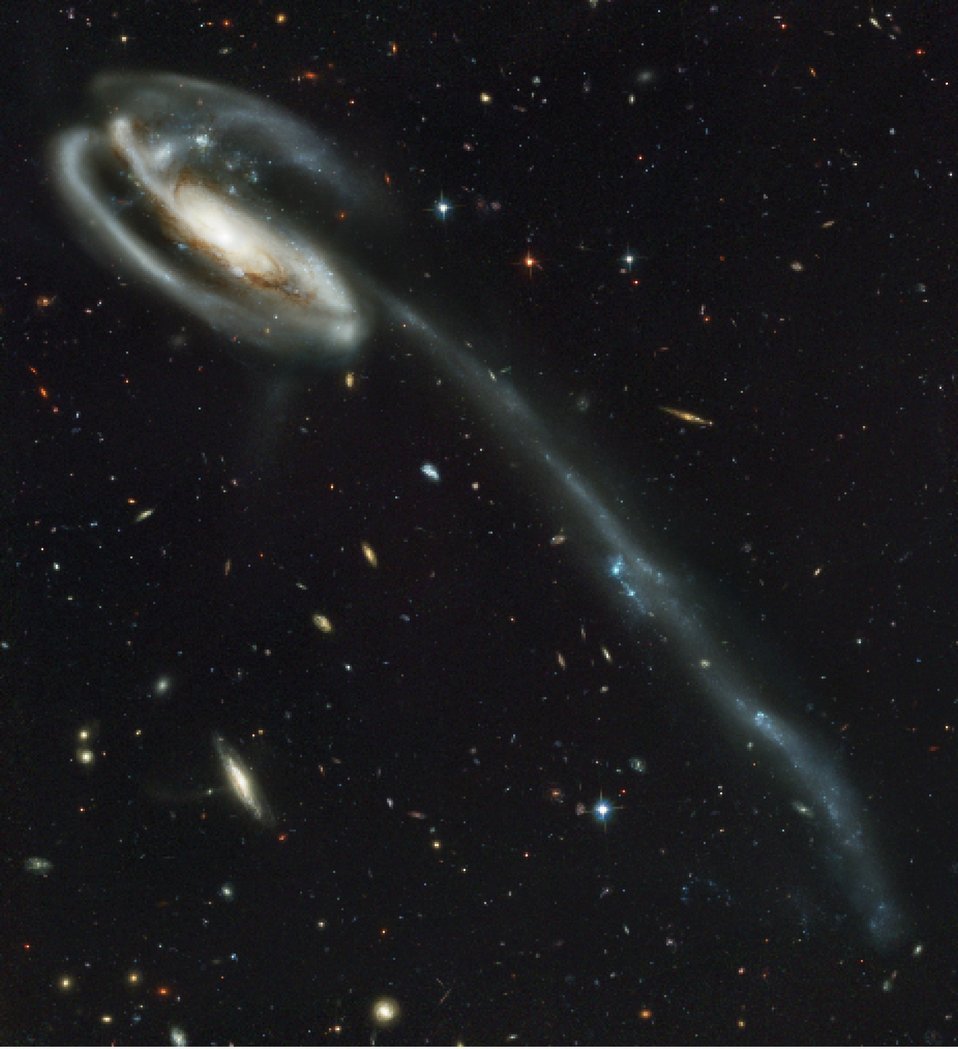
NIST Math Technique Opens Clearer Window on Universe

Galaxy UGC 10214 ('Tadpole'), imaged in 2002 by the Advanced Camera for Surveys (ACS) aboard NASA's Hubble Space Telescope, shows what NASA called a 'Whitman's Sampler of galaxies' from the universe's 13-billion-year evolution.